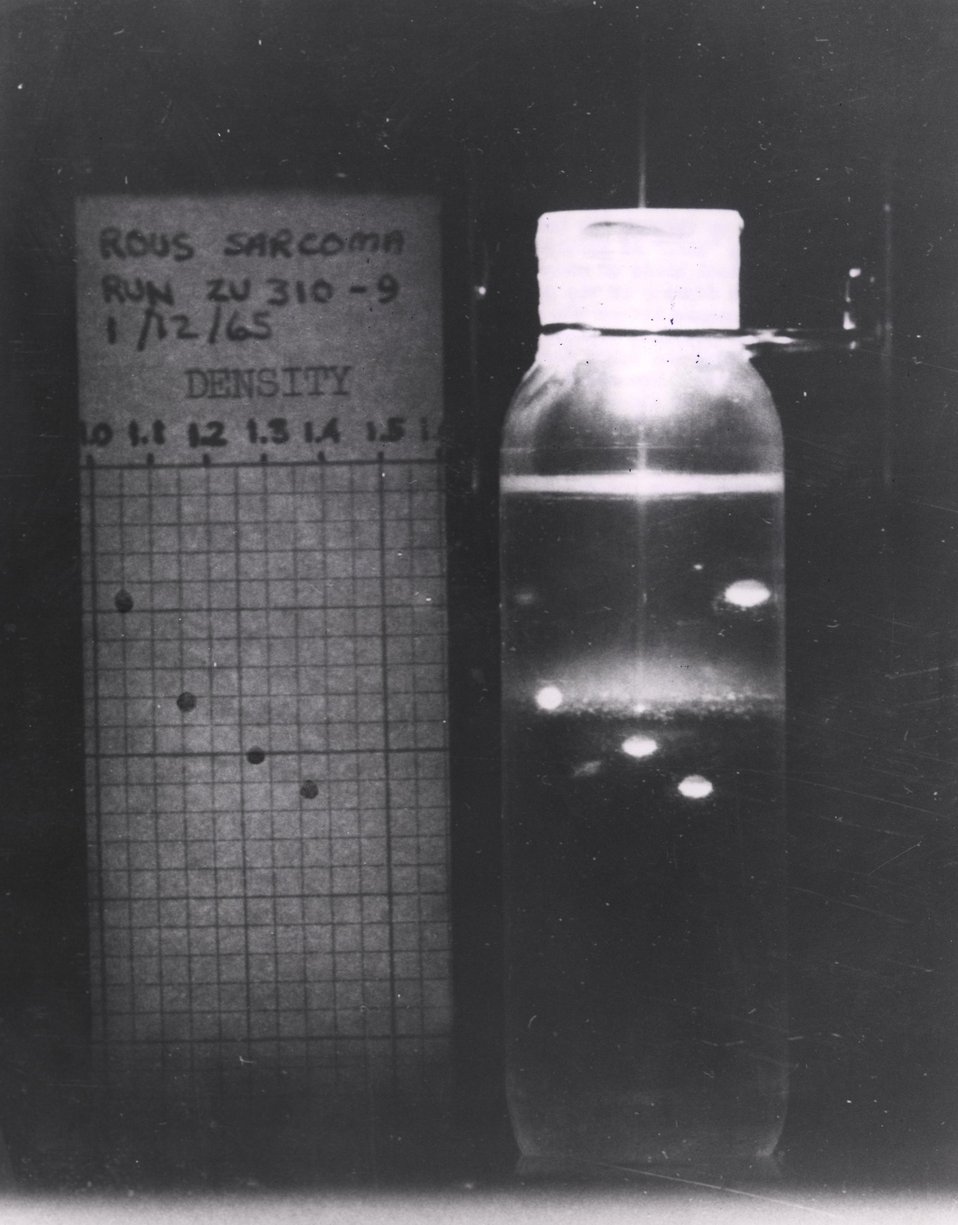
The band recovery apparatus is one of a family of new instruments and equipment developed to attack the problems of concentrating, detecting and recovering virus particles in a high state of purity. c. 1966